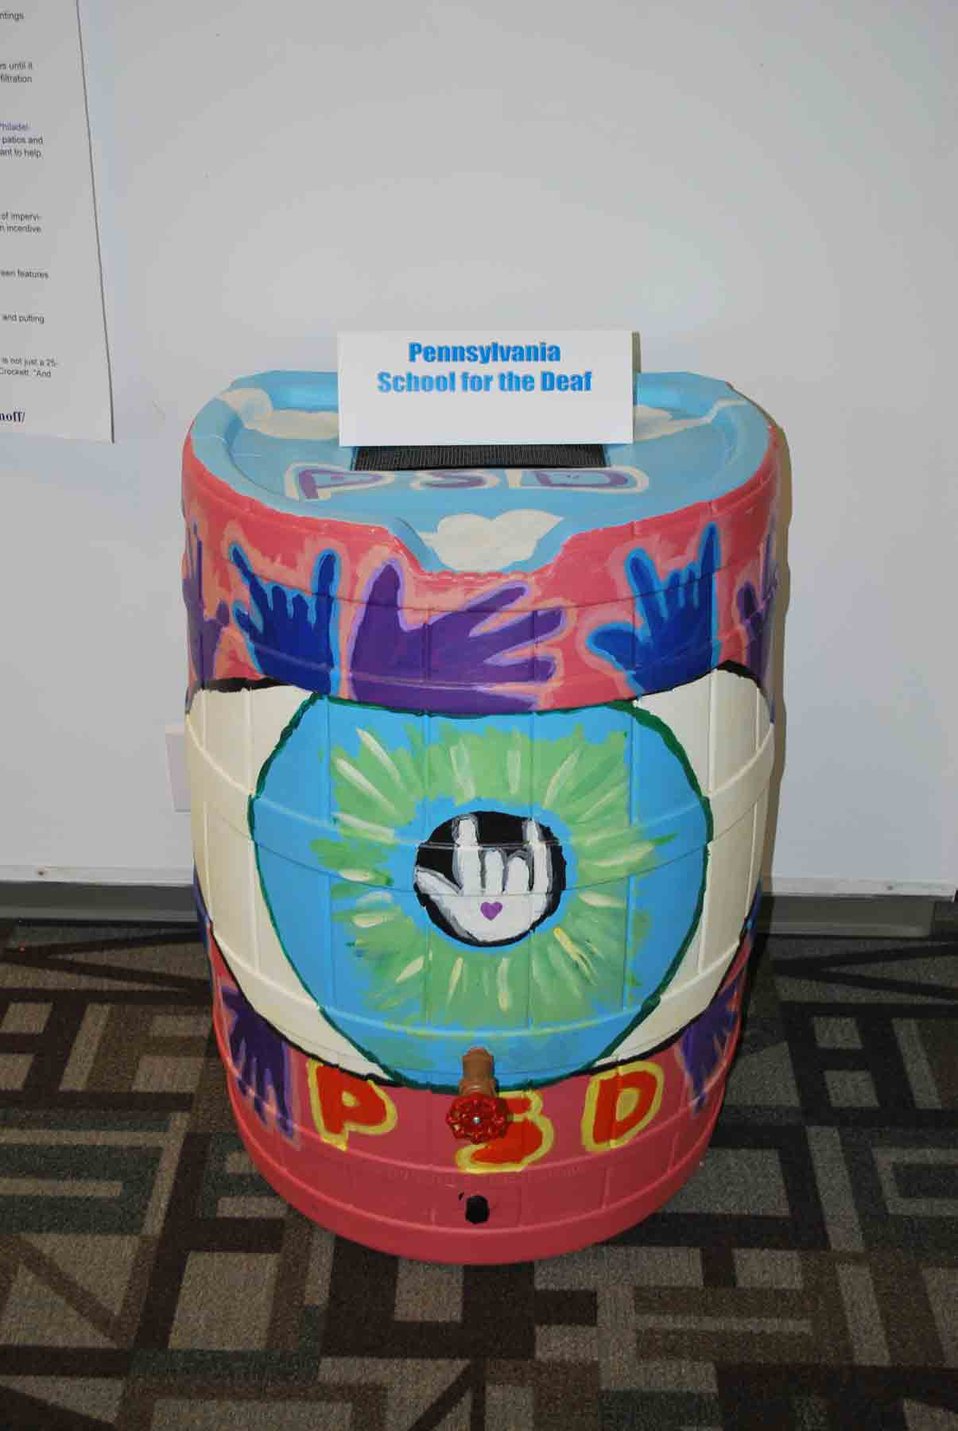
Rain Barrel Art by the Pennsylvania School for the Deaf

A rain barrel designed and painted by students from the Pennsylvania School for the Deaf with the Mt. Airy Art Garage. The exhibit will be on display until September 20, 2013 in the Public Information Center at EPA Region 3, Philadelphia, PA.